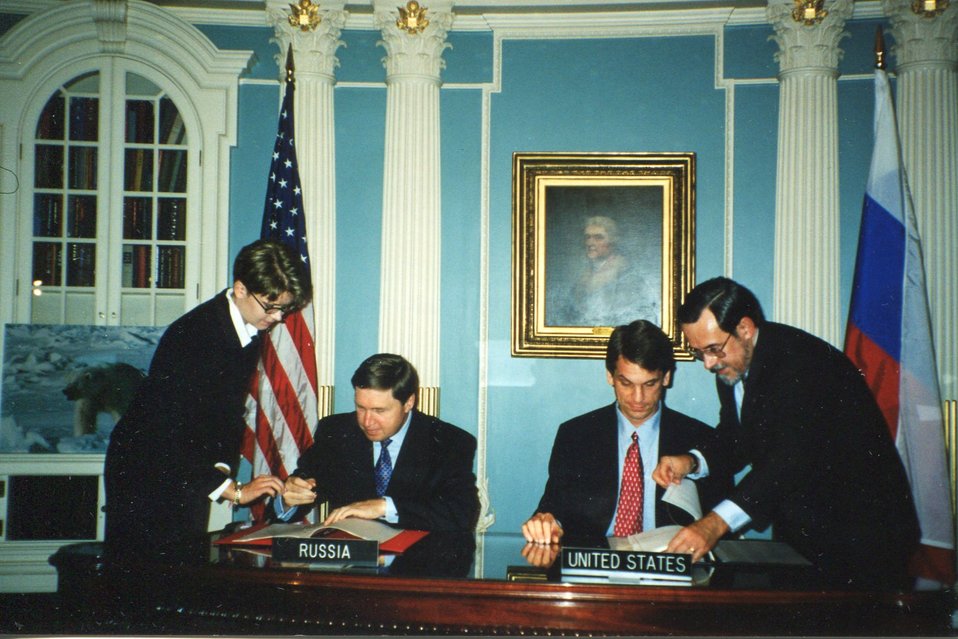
US-Russia Agreement

Signing of the US-Russia Agreement of the Conservation and Management of the Alaska-Chukotka Polar Bear Population in October 2000.